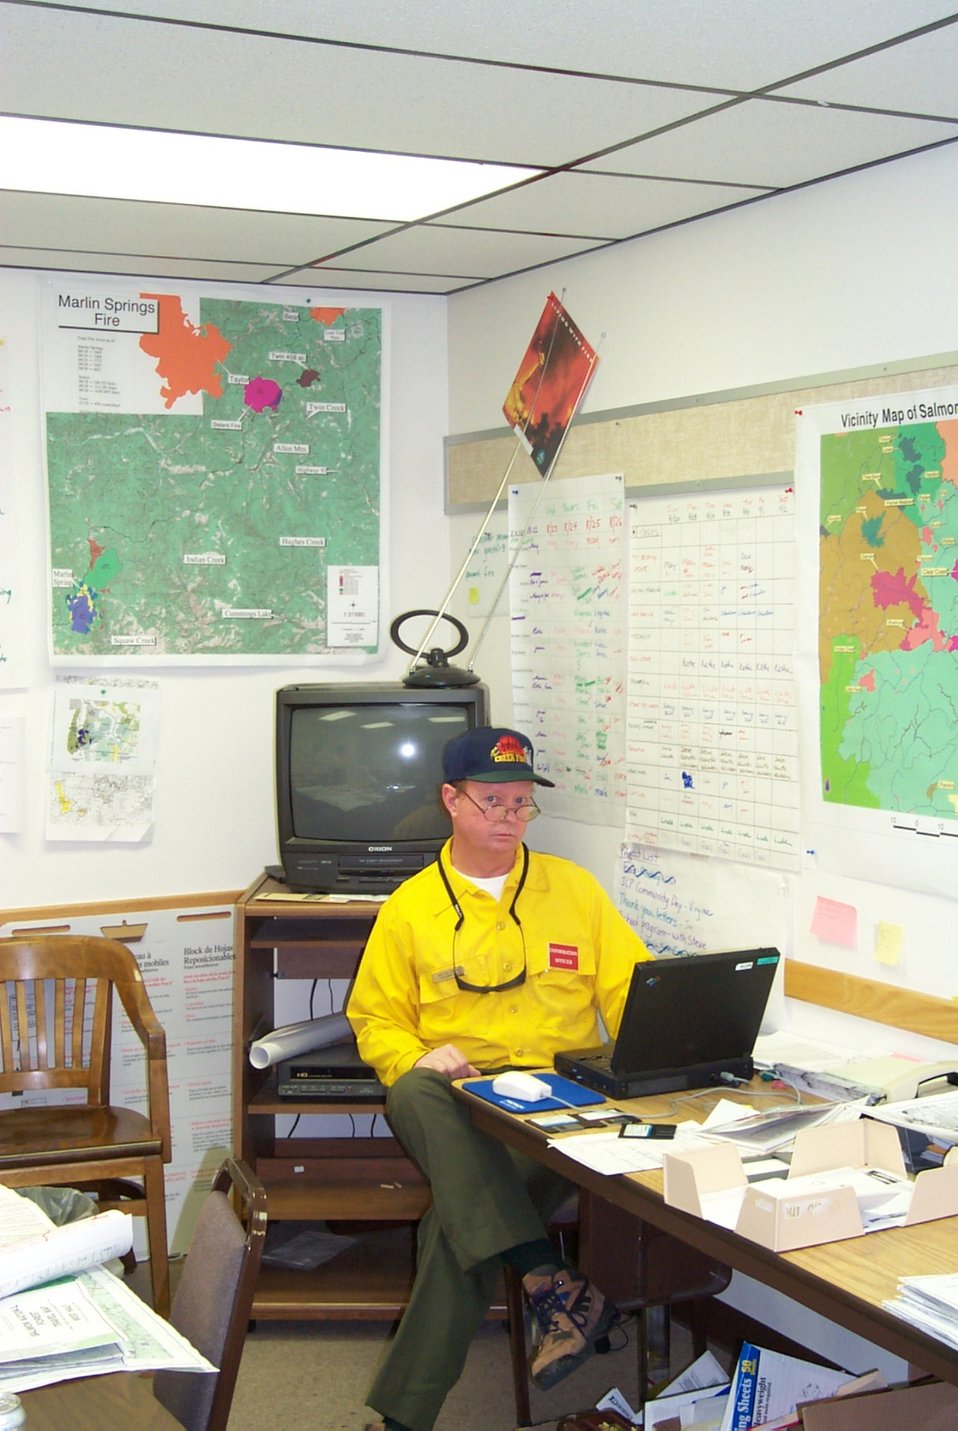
Fire Clearwater Fire Salmon Field Office USRD Upper Snake River District